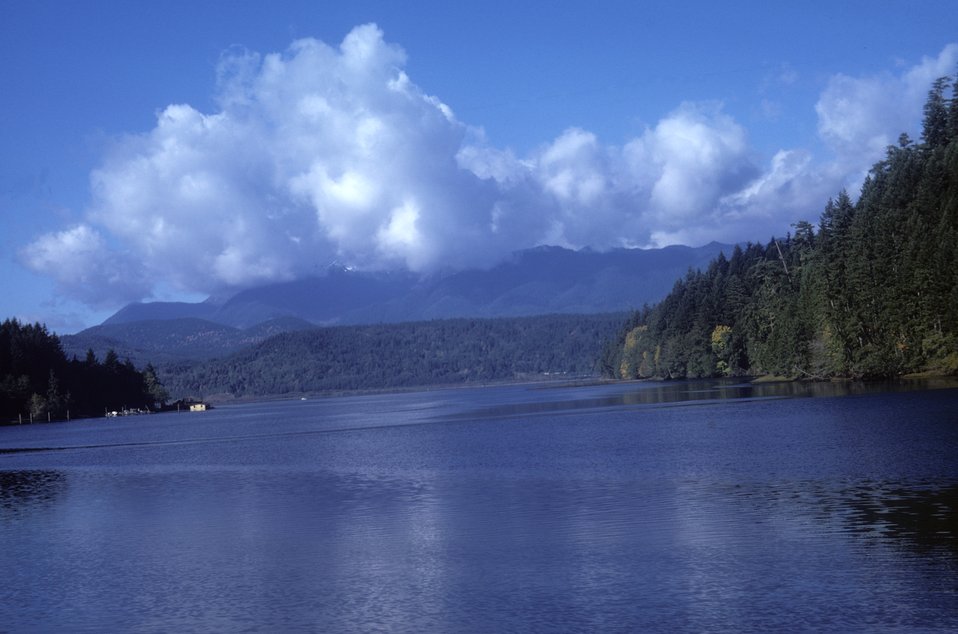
Tidal inlet in fall